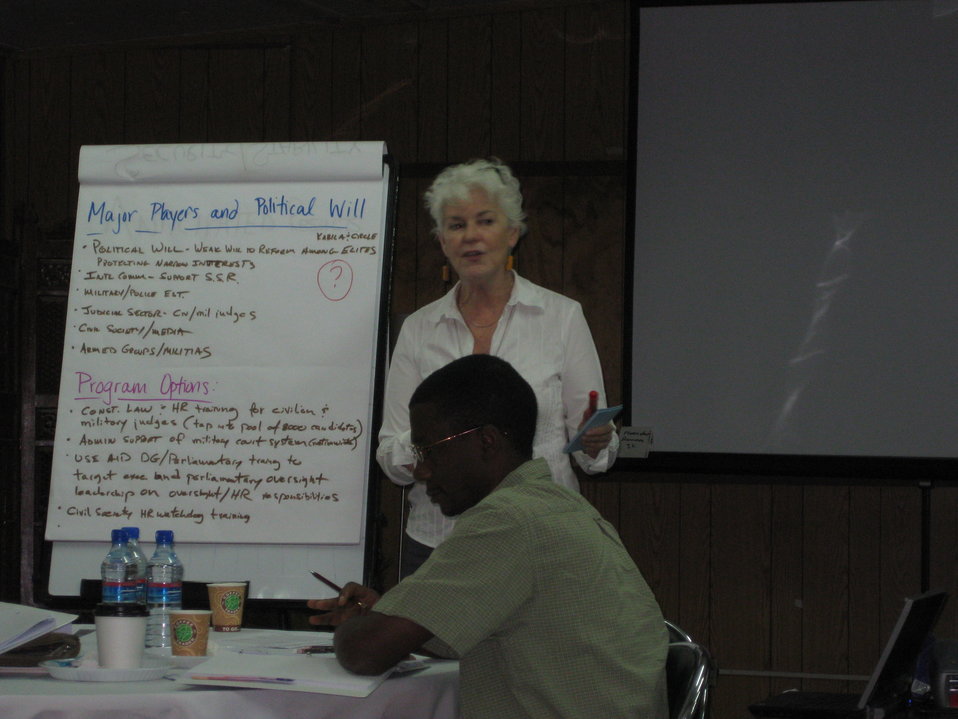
Afghan Youth Voices 033